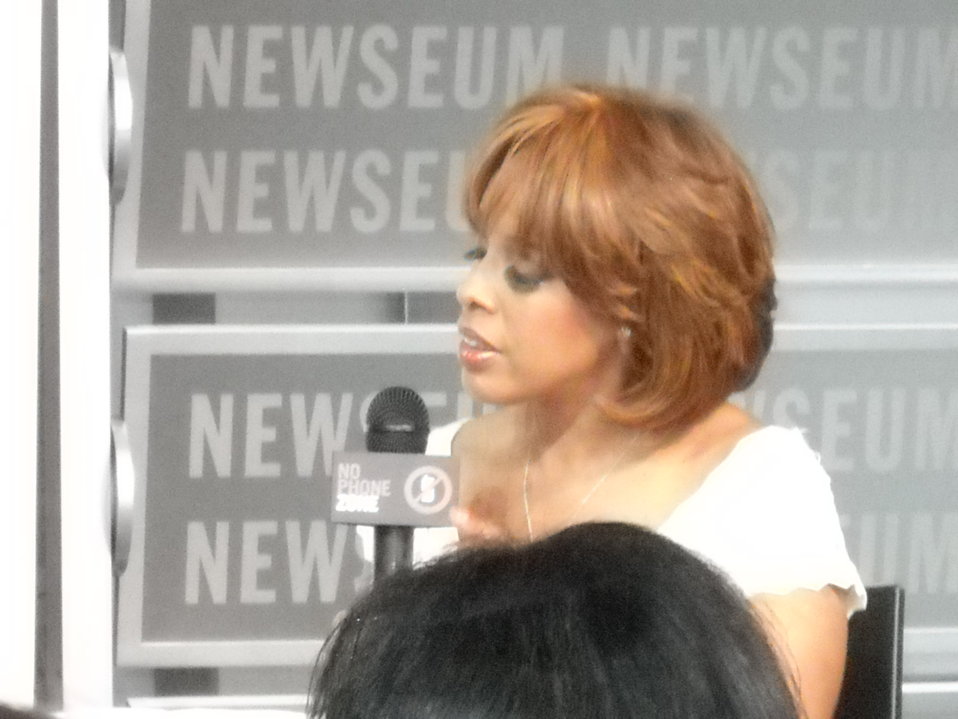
National No Phone Zone Day Newsum Washington, DC April 30, 2010 016